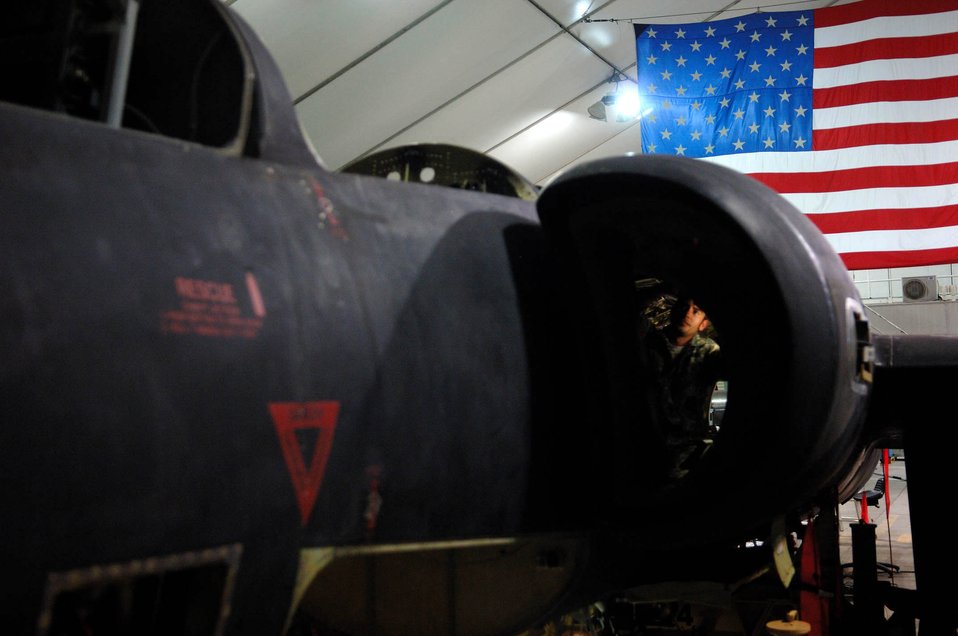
They only have eyes for U-2

Jeremy Matthews conducts phase maintenance on a U-2 May 23 at a Southwest Asian air base. Mr. Matthews is assigned to the 380th Expeditionary Aircraft Maintenance Squadron.